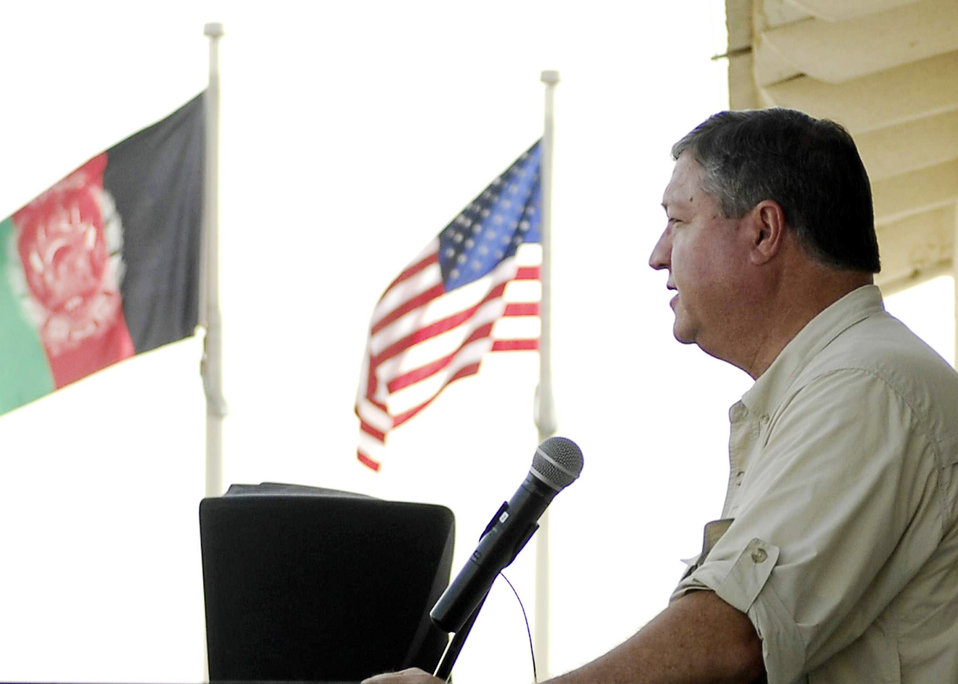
Air Force secretary praises Airmen, discusses ops with Bagram Airmen

Secretary of the Air Force Michael B. Donley addressed more than 300 members of the 455th Air Expeditionary Wing during an Airmen's Call Aug. 29, 2009, at Bagram Airfield, Afghanistan. Secretary Donley thanked Bagram Airfield Airmen for their support in the war and urged them to continue supporting all joint and coalition efforts.